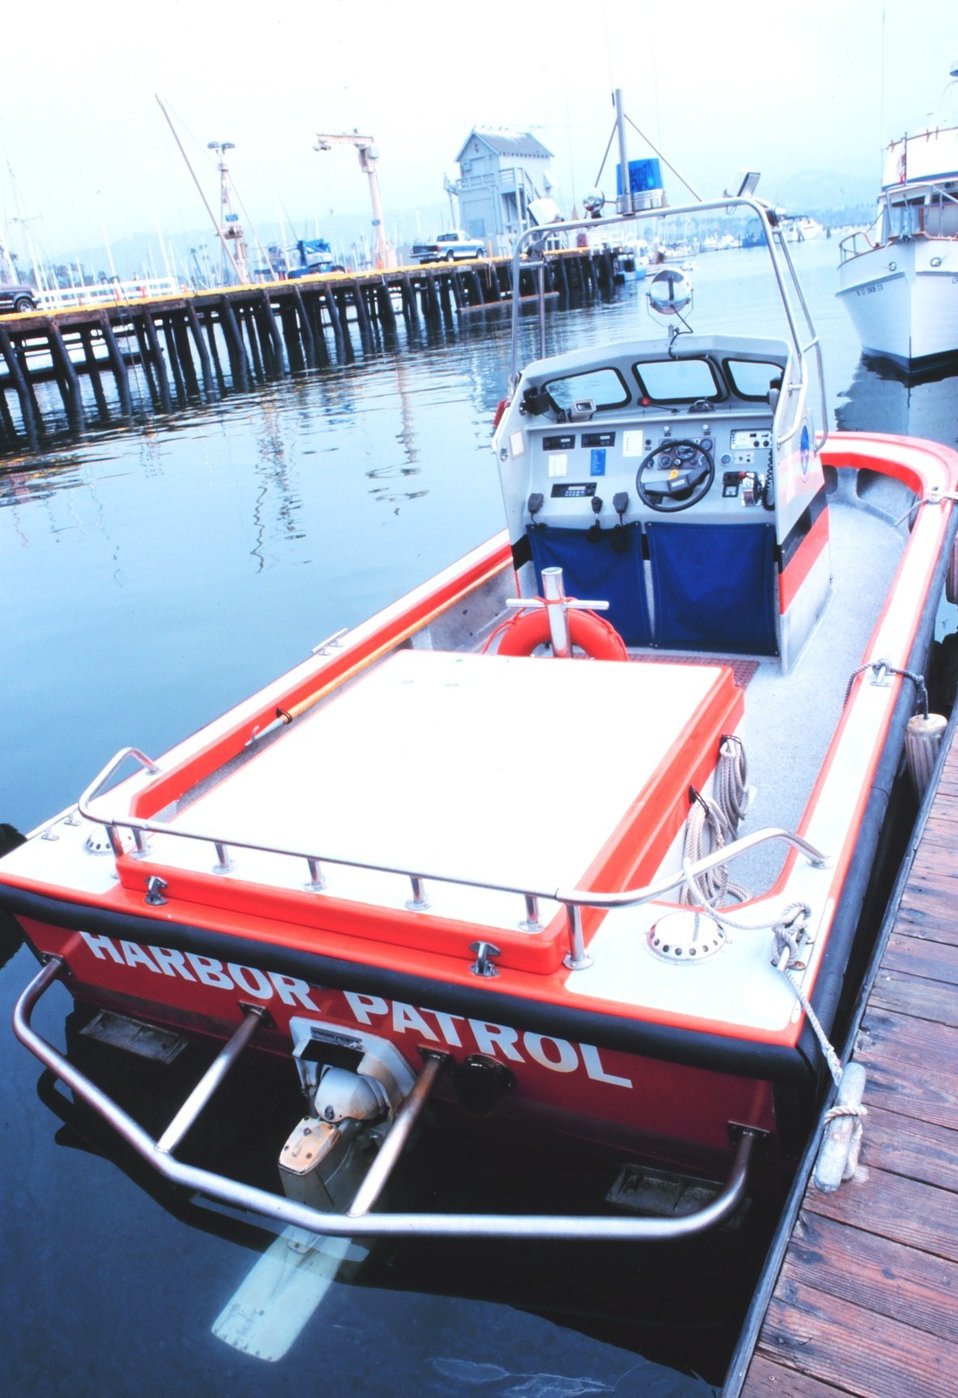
A harbor patrol boat at the commercial port